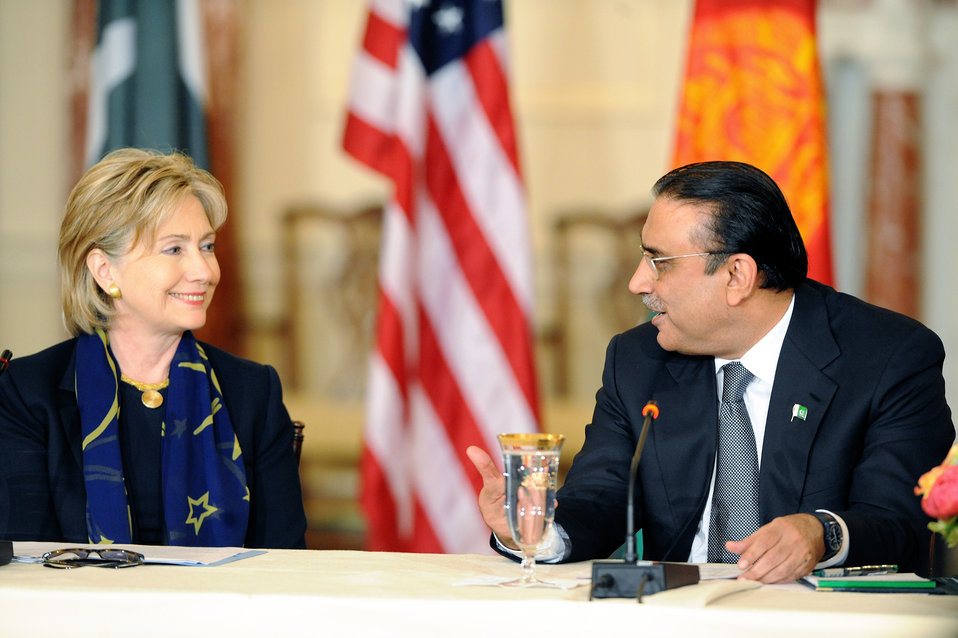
Trilateral Consultations With Afghanistan and Pakistan

U.S. Secretary of State Hillary Rodham Clinton and Pakistani President Asif Ali Zardari share remarks during trilateral consultations with Afghanistan and Pakistan at the U.S. Department of State in Washington, DC May 6, 2009.